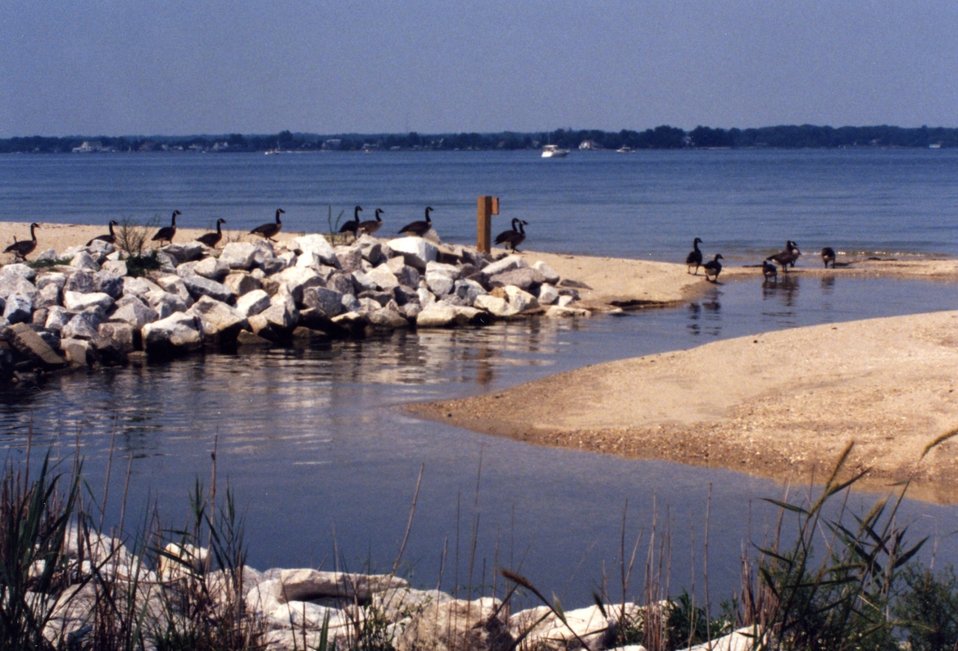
A flock of Canada geese along the Patuxent River in July. At this time of year, Canada geese are akin to being an invasive species.